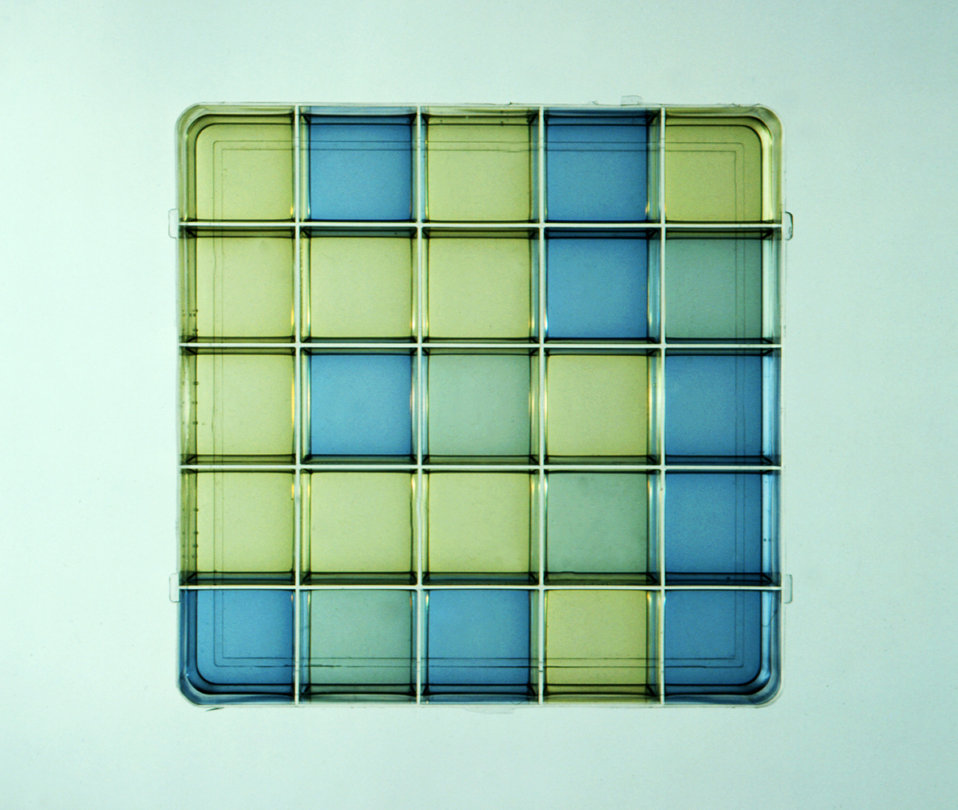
This is a 1976 photograph of a 25 well-plate ideal for the automation of biochemical reactions.